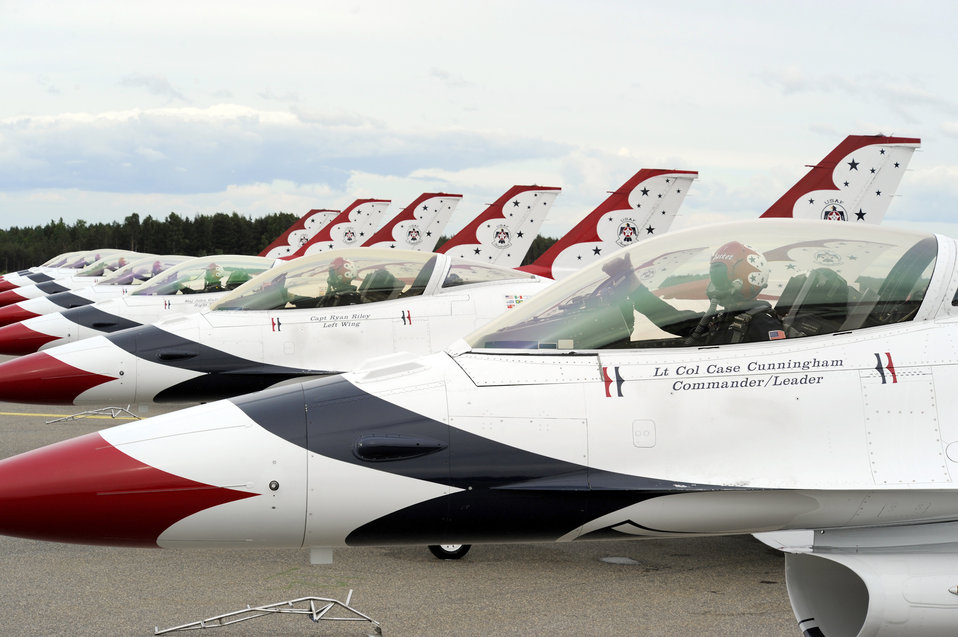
Thunderbirds in Finland

The Thunderbirds prepare to taxi June 17, 2011, at Turku Airport, Finland.